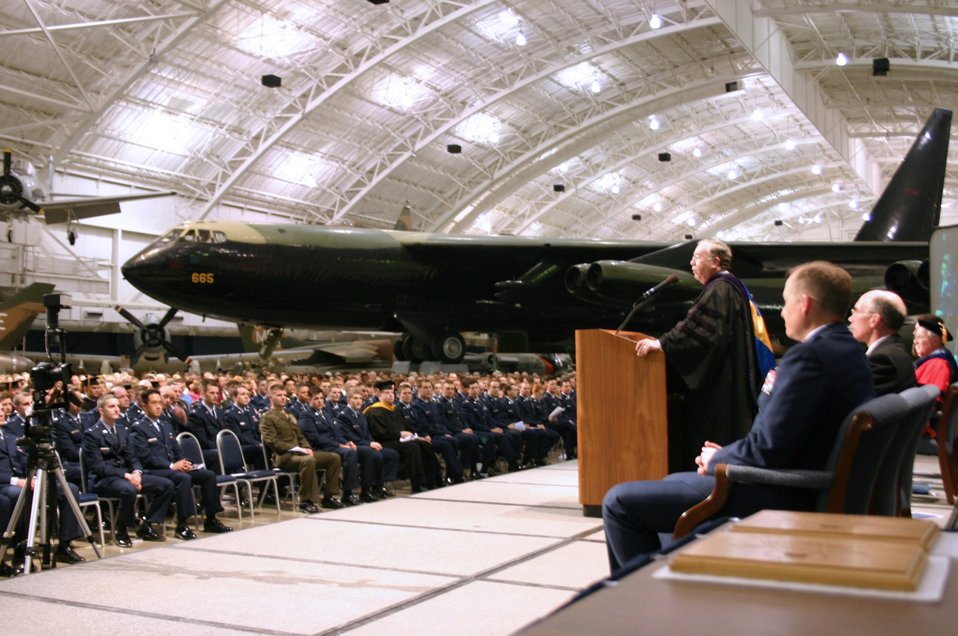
AFIT graduates Class of 2005

WRIGHT-PATTERSON AIR FORCE BASE, Ohio -- More than 230 scientists and engineers received graduate and doctorate degrees from the Air Force Institute of Technology during graduation ceremonies at the National Museum of the U.S. Air Force here March 21. Ohio Congressman Dave Hobson presents the commencement address to the class.